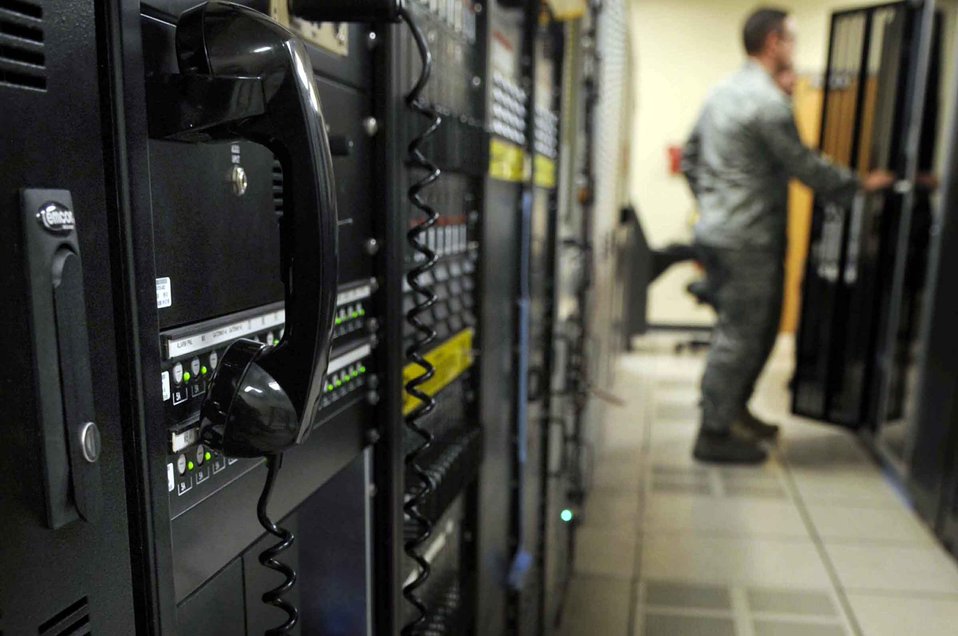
Ellsworth officials launch digital airport surveillance radar

Airmen of the 28th Communications Squadron radar maintenance view the status of the digital airport surveillance radar Oct. 14, 2009, at Ellsworth Air Force Base, S.D. The DASR technology uses less power, requires less maintenance and manpower, and costs significantly less to operate than other systems currently in use.